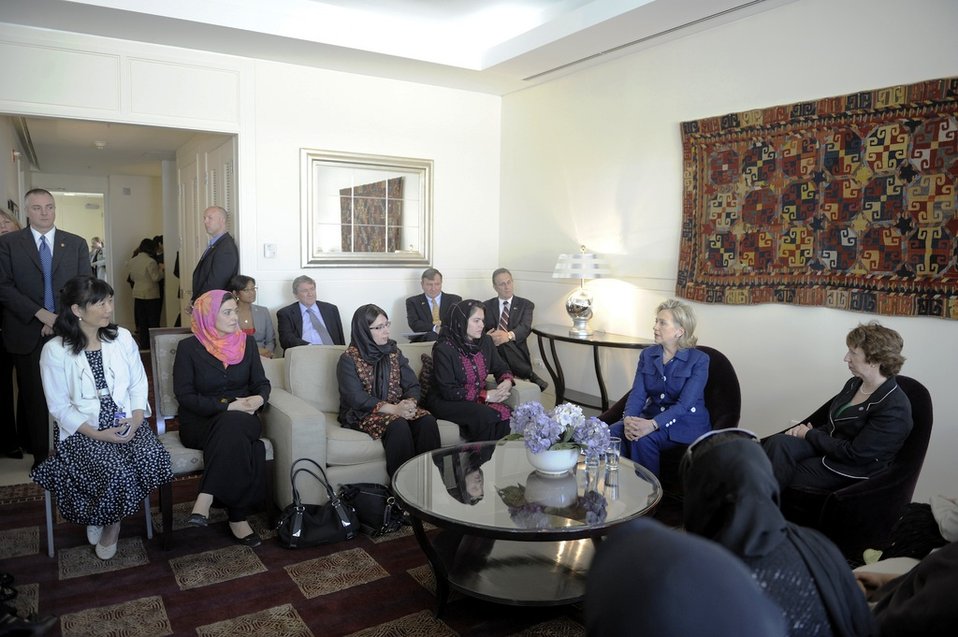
Secretary Clinton Participates in a Women's Empowerment Event

U.S. Secretary of State Hillary Rodham Clinton (second from right) participates in a women’s empowerment event hosted by EU High Representative for Foreign Policy Catherine Ashton (right) in Kabul, Afghanistan, on July 20, 2010.